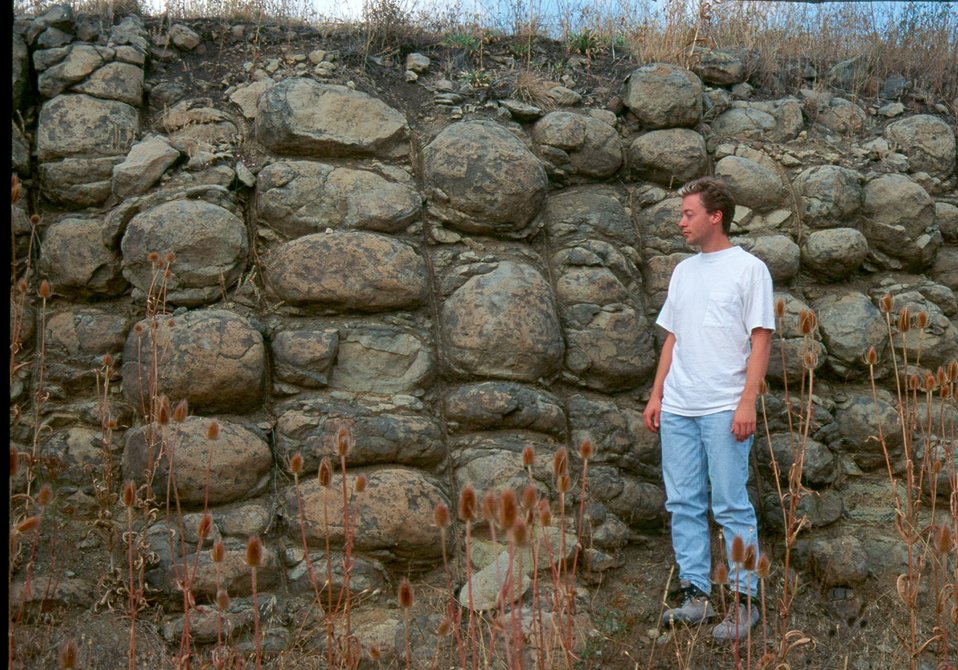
Weathering basalt column Grangeville Cottonwood Field Office UCSC Upper Columbia Salmon Clearwater District